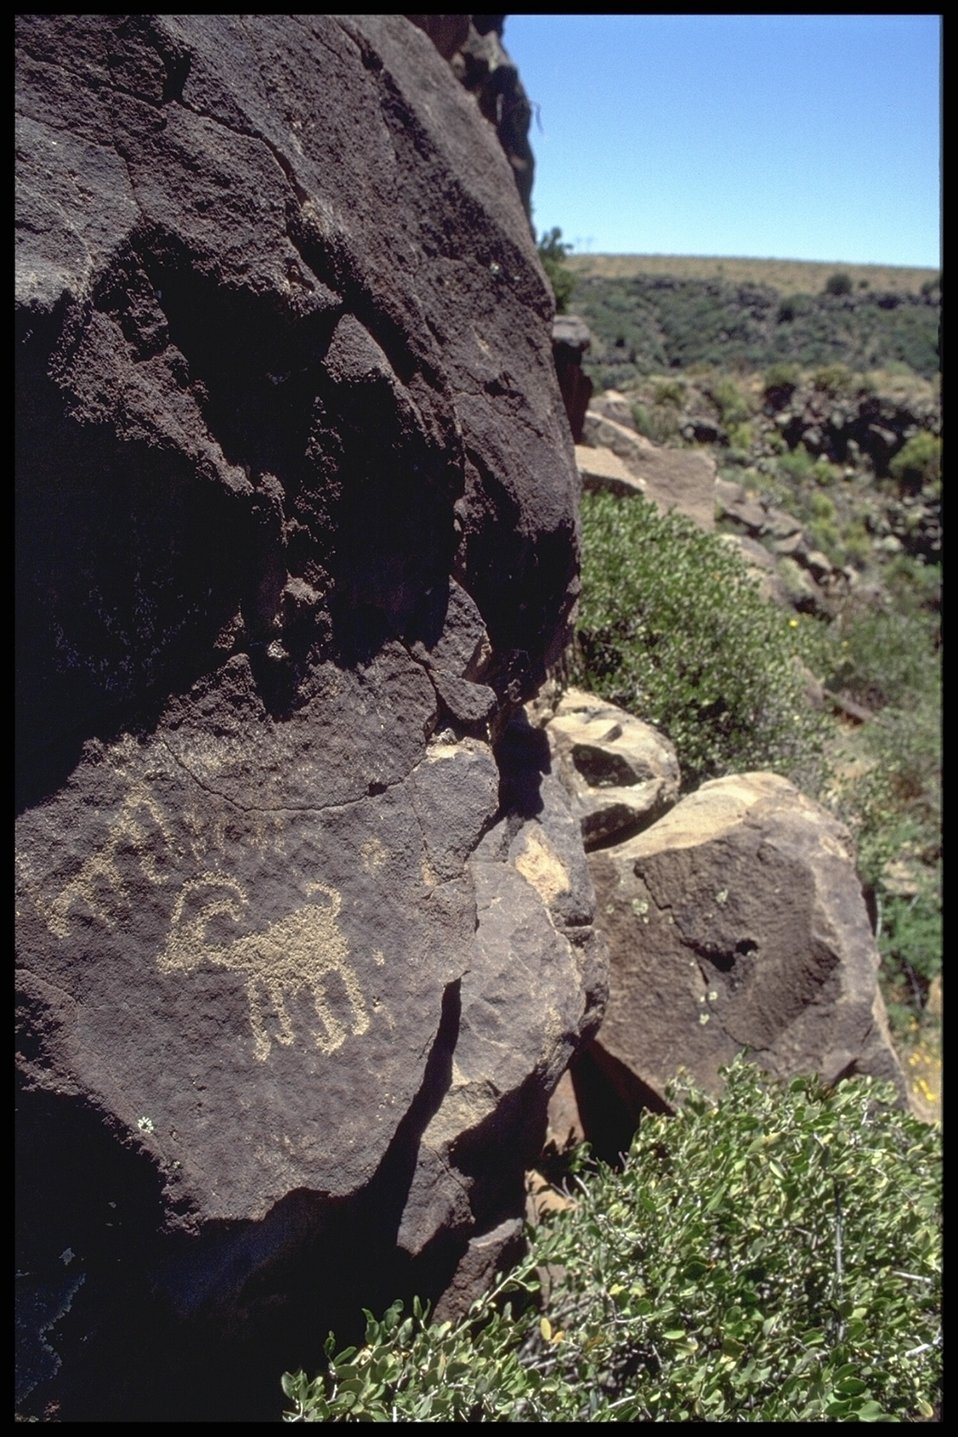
Petroglphs (Rock Art) can be found throughout the 71,000 Acres that make up the Agua Fria National Monument.